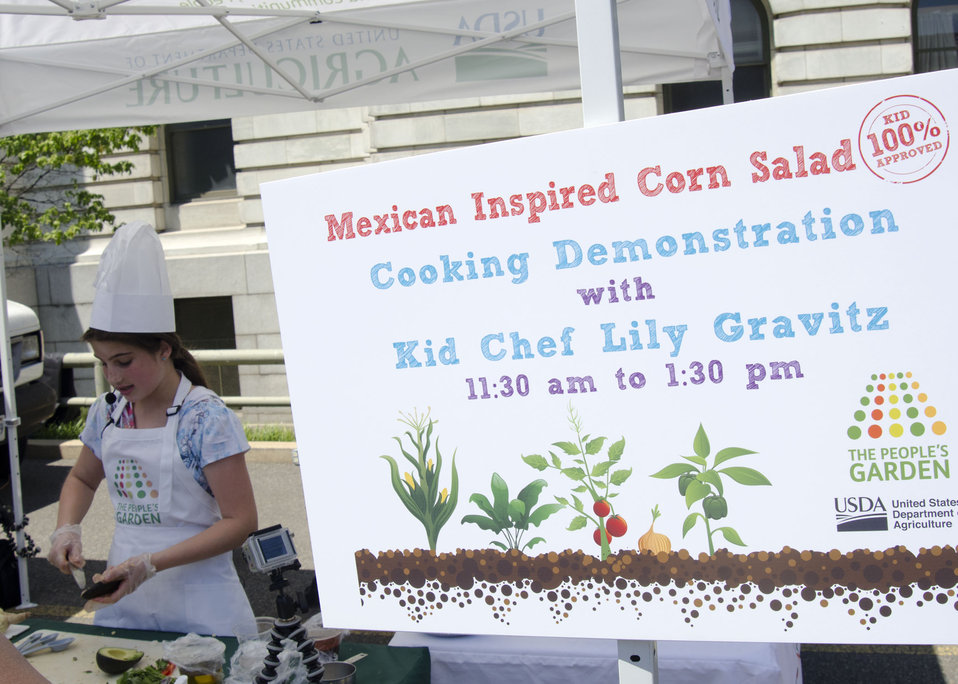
Kid Chef Lily Gravitz, 12, prepares Mexican inspired corn salad during her cooking demonstration at the U.S. Department of Agriculture Farmers Market, located in Washington, DC, Friday, July 1, 2011.